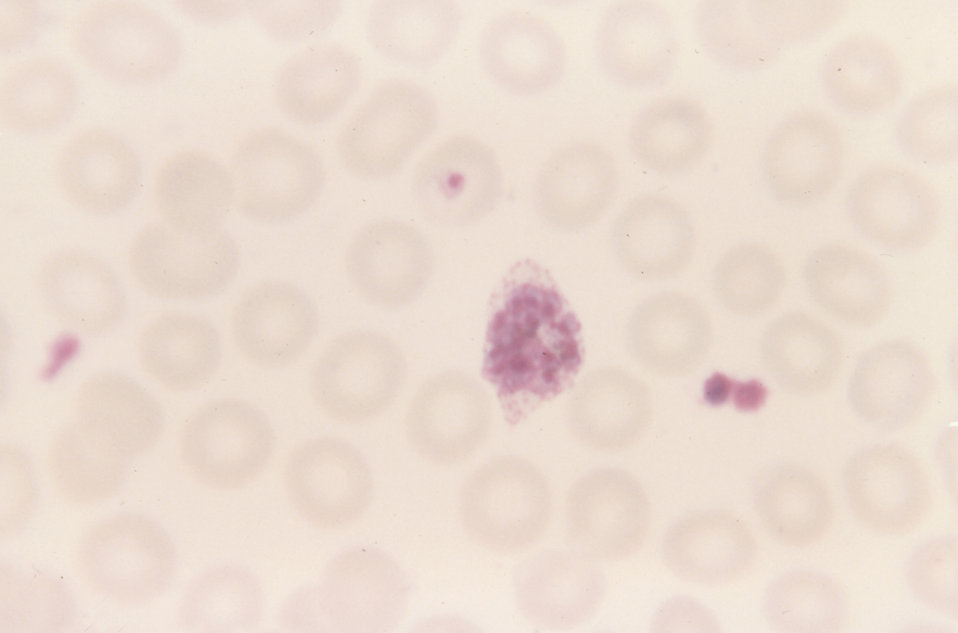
This photomicrograph reveals a mature Plasmodium ovale schizont with containing twelve merozoites.